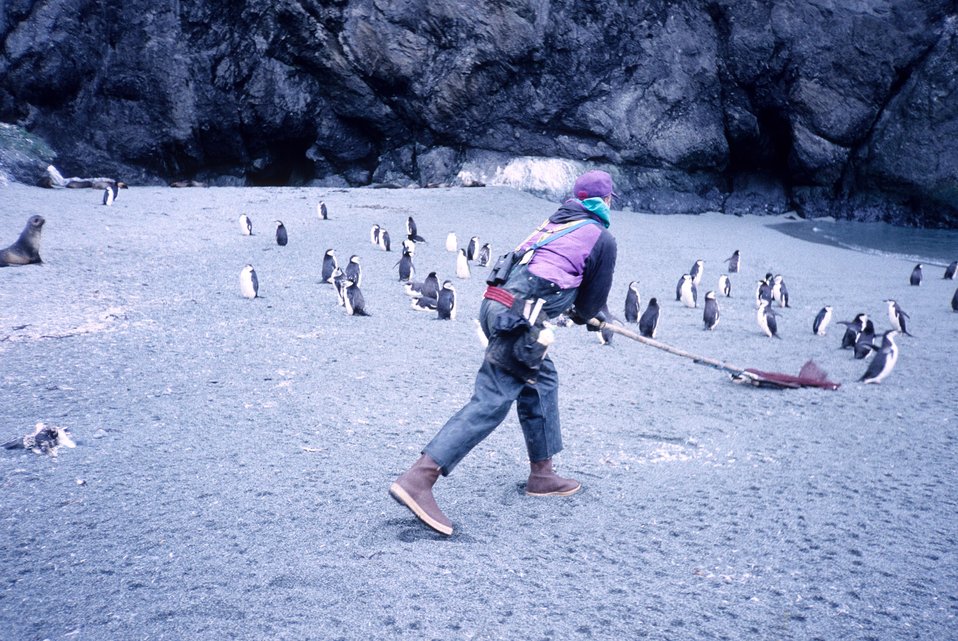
A close up of an Antarctic fur seal's teeth.